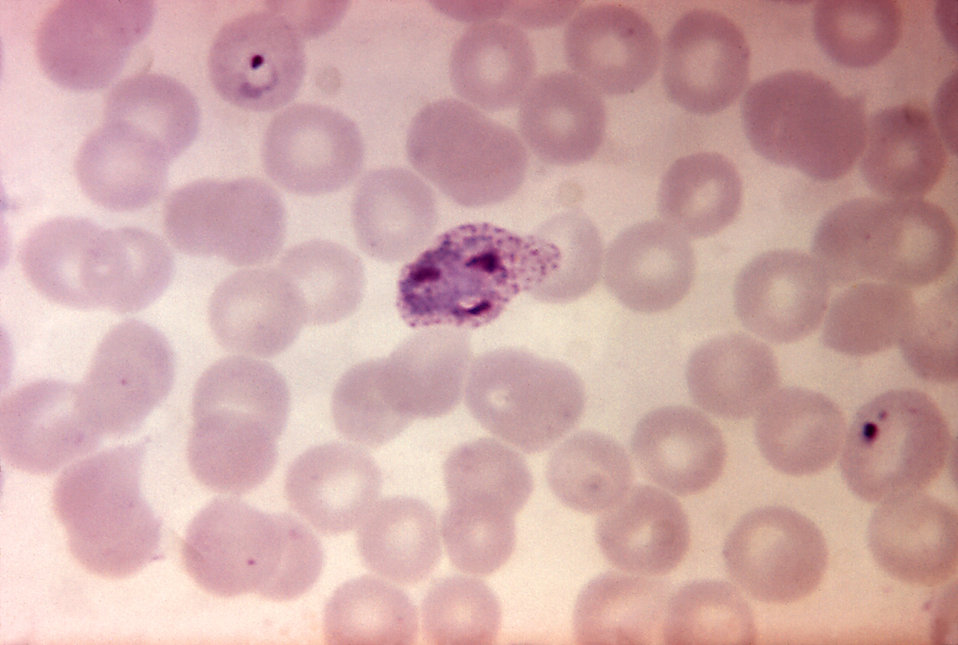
This blood smear micrograph reveals the presence of an immature P. vivax schizont; Mag. 1250X.